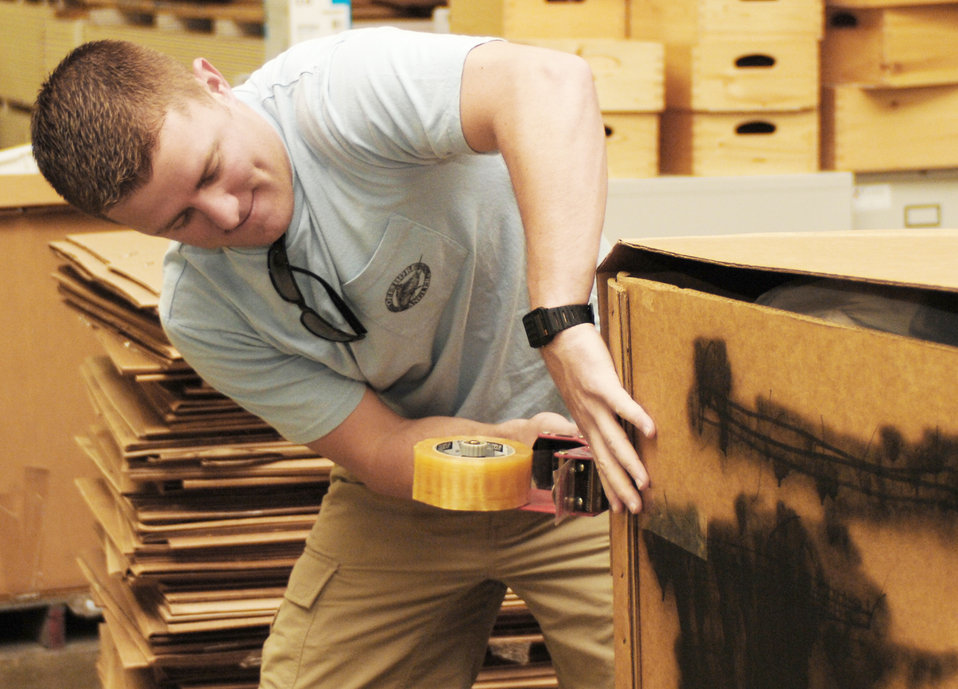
Airmen aid Stop Hunger Now

1st Lt. Michael Malone tapes a box full of winter clothing headed to Afghanistan during the Stop Hunger Now event Oct. 24, 2009, at the MERCI Mission Center in Goldsboro, N.C. About 200 volunteers from the Seymour Johnson Air Force Base and Goldsboro communities in North Carolina gathered to package 115,000 meals and thousands of pounds of clothing for the people of Afghanistan. Lieutenant Malone is a 333rd Fighter Squadron pilot.